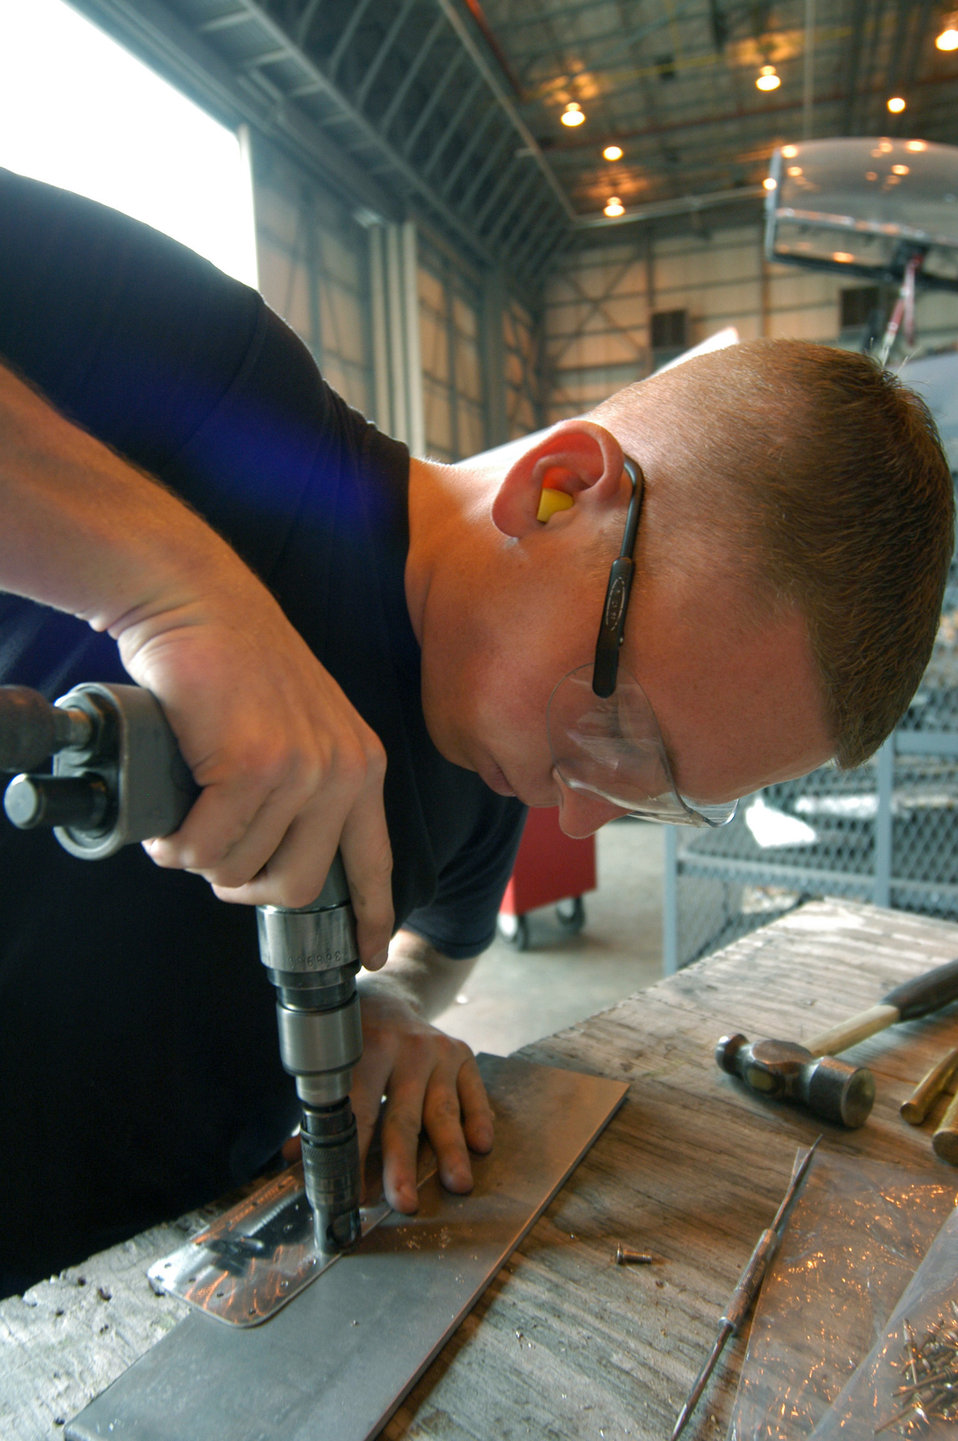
Preserving history

ROBINS AIR FORCE BASE, Ga. -- Staff Sgt. Jason Henderson works on a panel of an F-100 at the museum of aviation here. He is assigned to the 653rd Combat Logistics Support Squadron. For 19 years, squadron Airmen have helped the museum's restoration team.